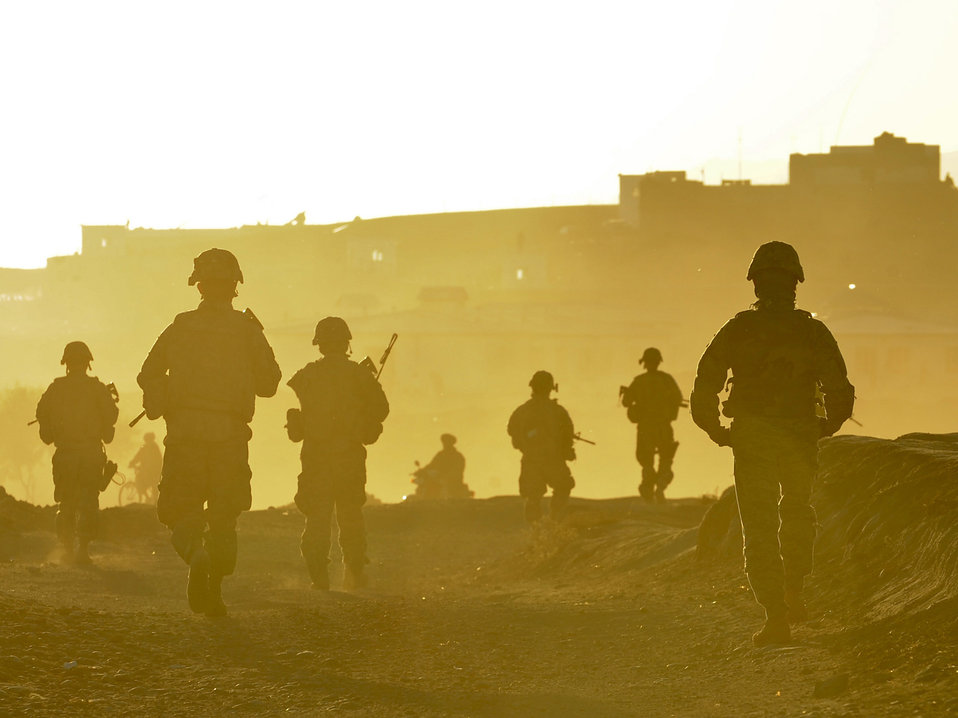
Provincial Reconstruction Team Zabul

Soldiers and Airmen return to base after a patrol Nov. 1, 2010, near the city of Qalat, Afghanistan, in the Zabul Province. The Provincial Reconstruction Team Zabul is composed of Air Force, Army, Department of State, U.S. Agency for International Development and Department of Agriculture personnel who work with the government of Afghanistan to improve governance, stability, and development throughout the province.